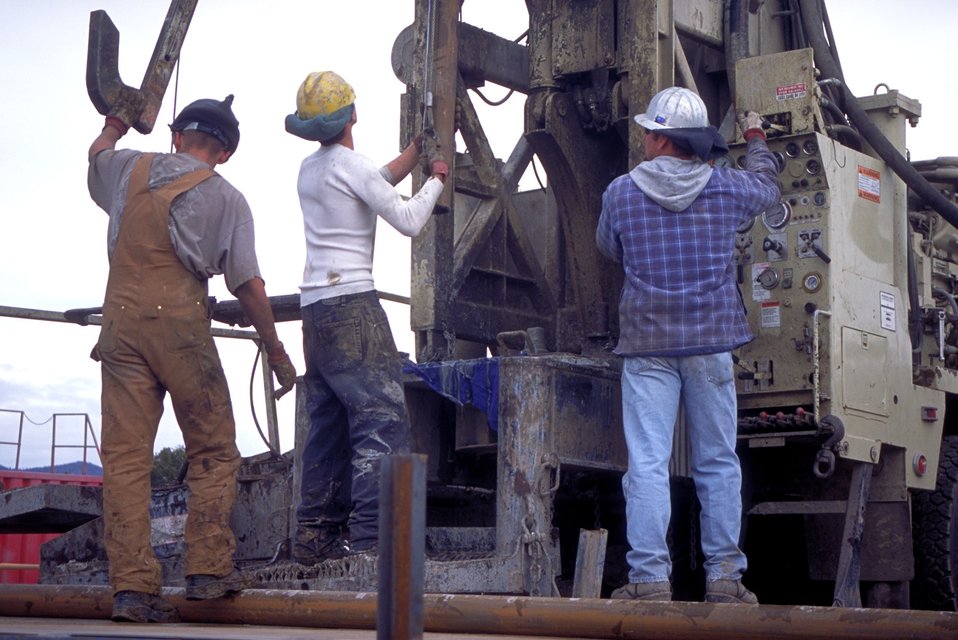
Drilling for coal bed methane near Price, Utah.